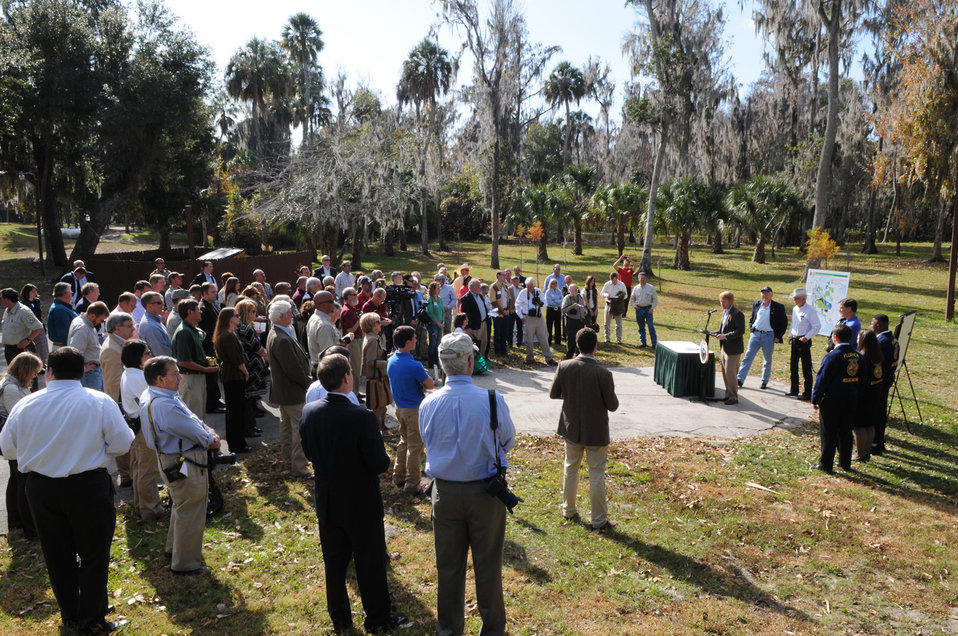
Event Announcing Everglades Headwaters NWR